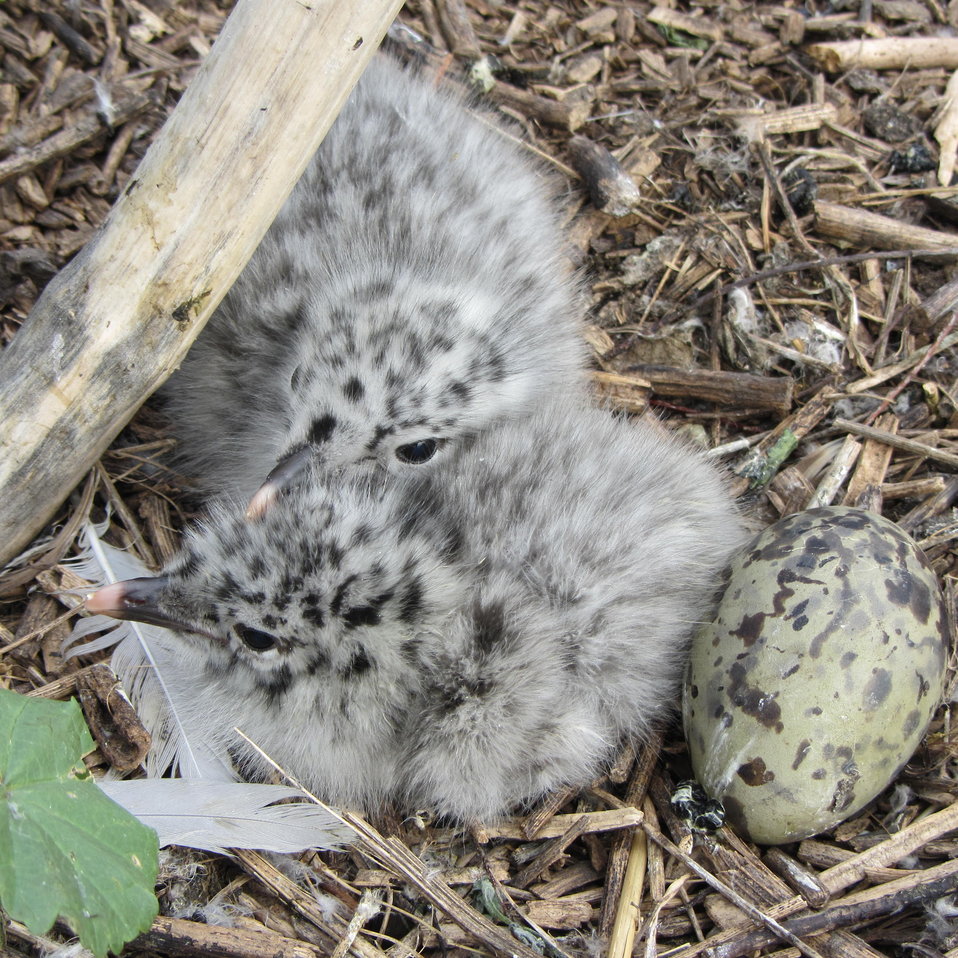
Ring-billed Gull Chicks and Egg

Jackie Jacobson/USFWS